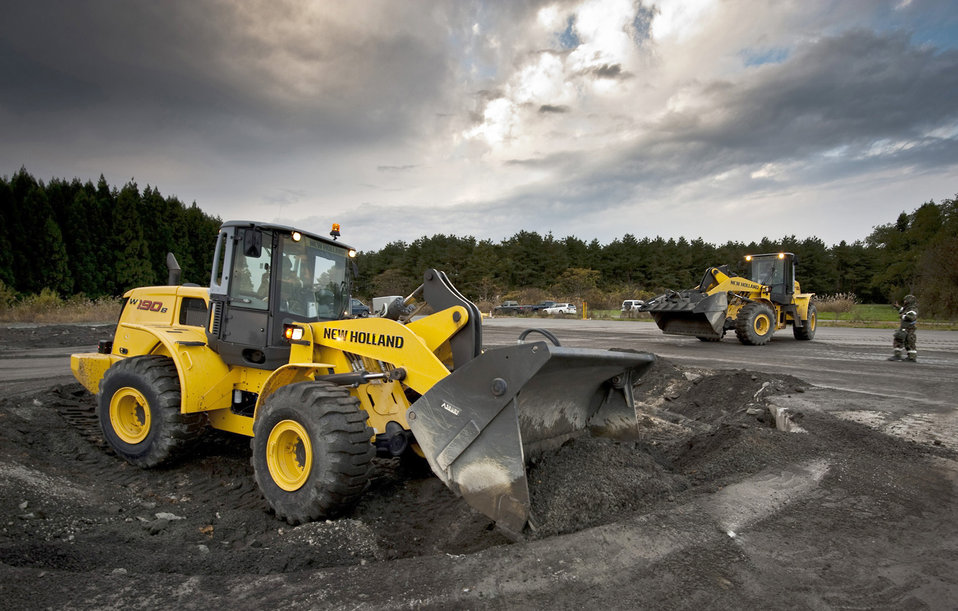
Crater no more

Two front-end loaders from the 35th Civil Engineer Squadron clear debris from a 'missile impact' crater during an operational readiness exercise Nov. 8, 2010, at Misawa Air Base, Japan.